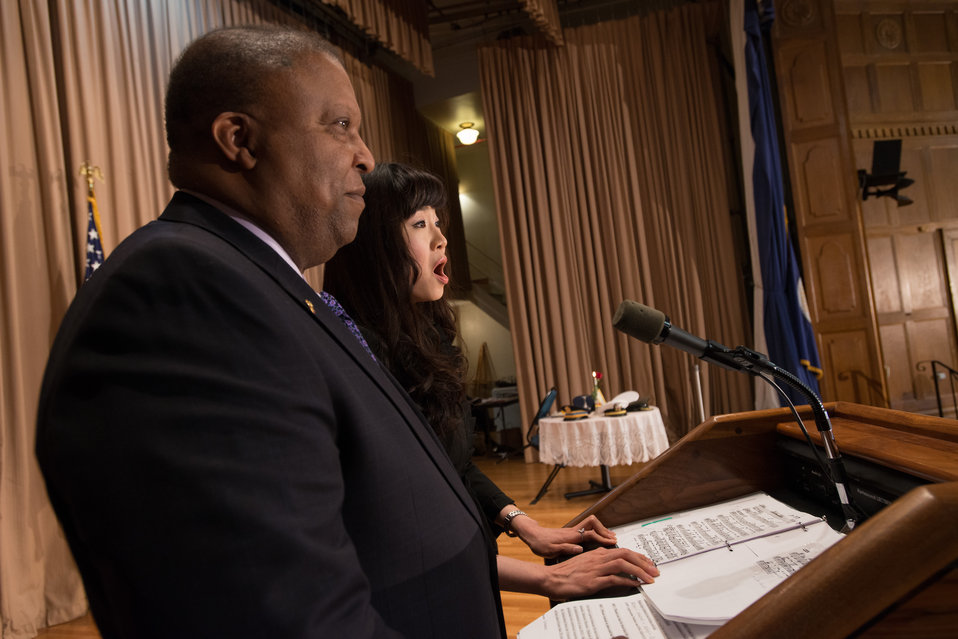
U.S. Department of Agriculture (USDA) Agricultural Marketing Service (AMS) Livestock, Poultry and Seed Division Associate Deputy Administrator and U.S. Marine Corps Lieutenant Colonel (retired) Douglas Keeler, left, moderates, and Soprano Amy Keesun Kwon sings the major Service songs of each of the Armed Services as U.S. Department of Agriculture (USDA) personnel who have served, or are serving in a Uniformed Armed Service are called by their Service to stand and be honored, during the 2013 USDA Veterans’ Day Observance, whose theme is “VALOR, COURAGE, SACRIFICE – HONORING ALL WHO SERVED,” in Washington, D.C., on Wednesday, November 20, 2013.